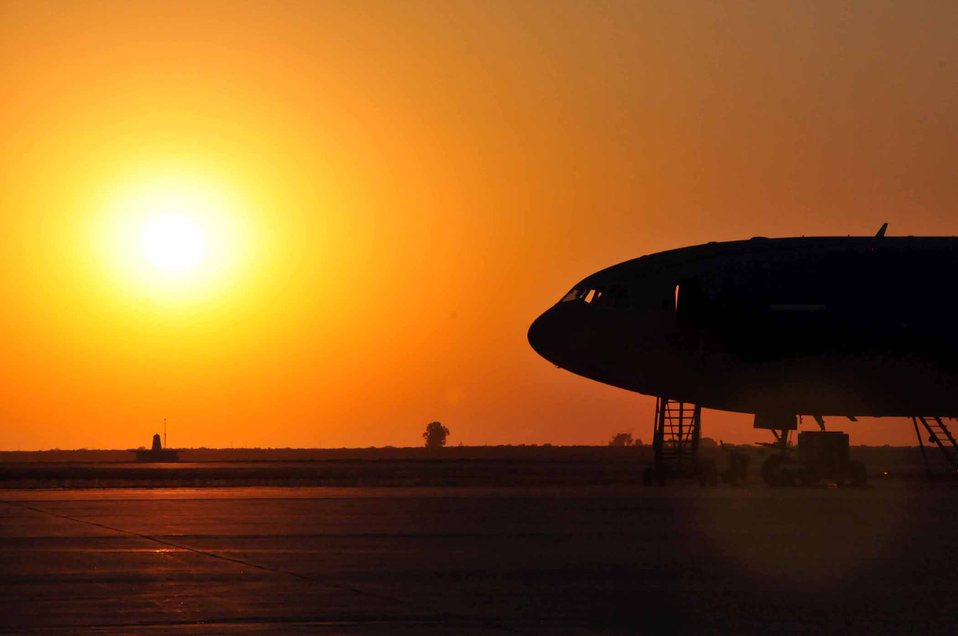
Awaiting orders

A KC-10 Extender sits ready for its next mission July 15, 2011, at the 313th Air Expeditionary Wing in Western Europe.